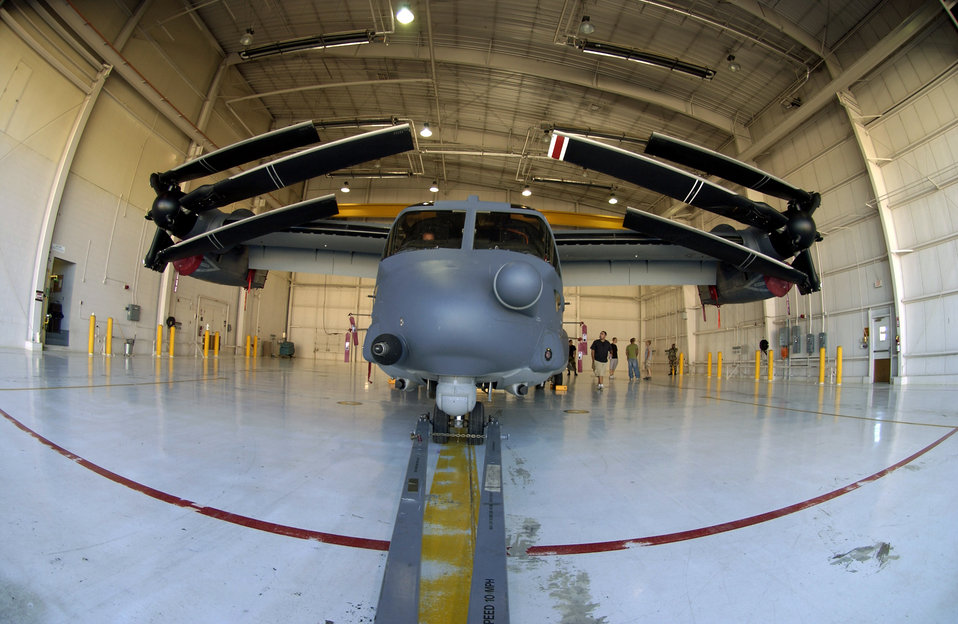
'Fit' to fight

A CV-22 Osprey with its rotors folded sits in a hangar during a hangar clearance test Sept. 25 at Cannon AFB, N.M. Cannon AFB will be transferred from Air Combat Command to Air Force Special Operations Command Oct. 1. CV-22s are among the special operations aircraft to be assigned to the 27th Special Operations Wing at Cannon.